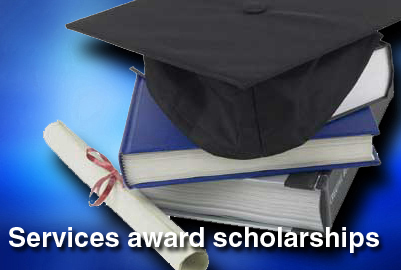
Scholarships awarded